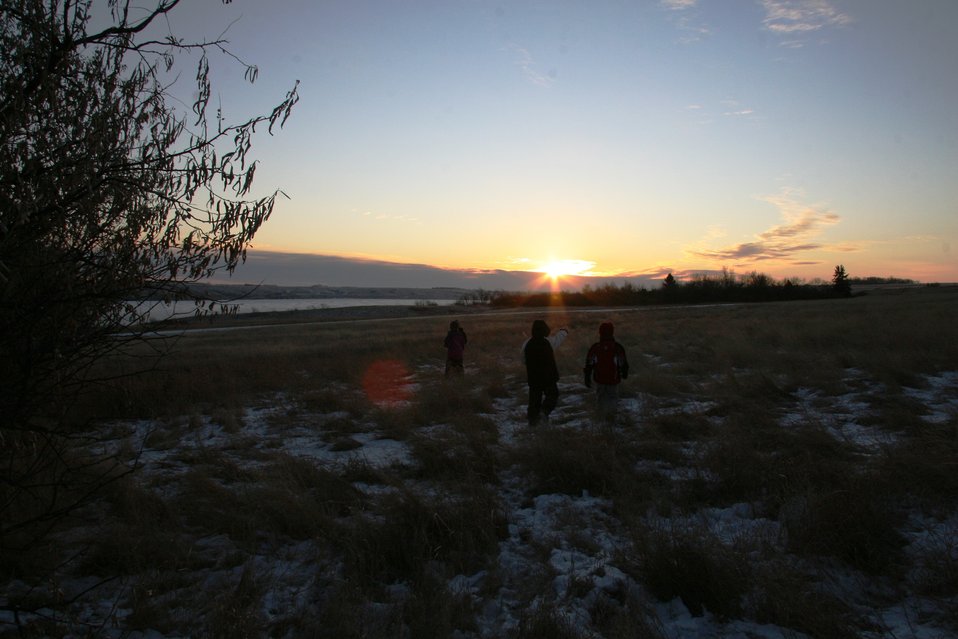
Three Participants Searching for the 'Big' Bird

Searching for the 'Big' bird.